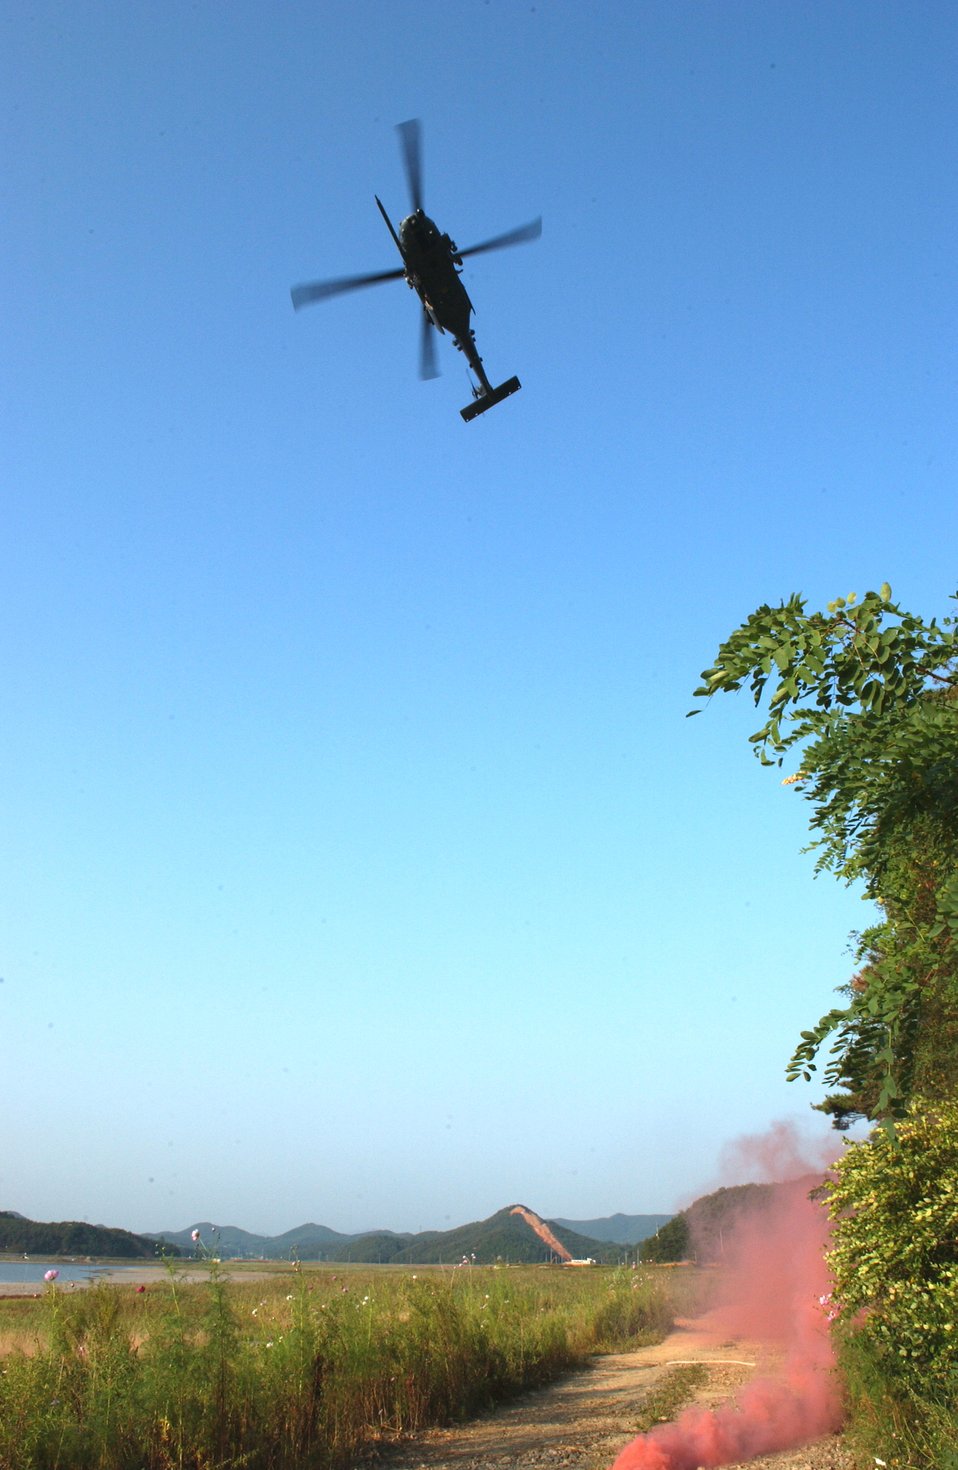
Life-saving training at Osan AB

An HH-60 Pavehawk crew prepares to recover two survivors during combat search and rescue training Sept. 21 near Osan Air Base, South Korea. Annual training is conducted by survival, evasion, resistance and escape instructors to reacquaint aircrew members with combat search and rescue procedures and techniques.